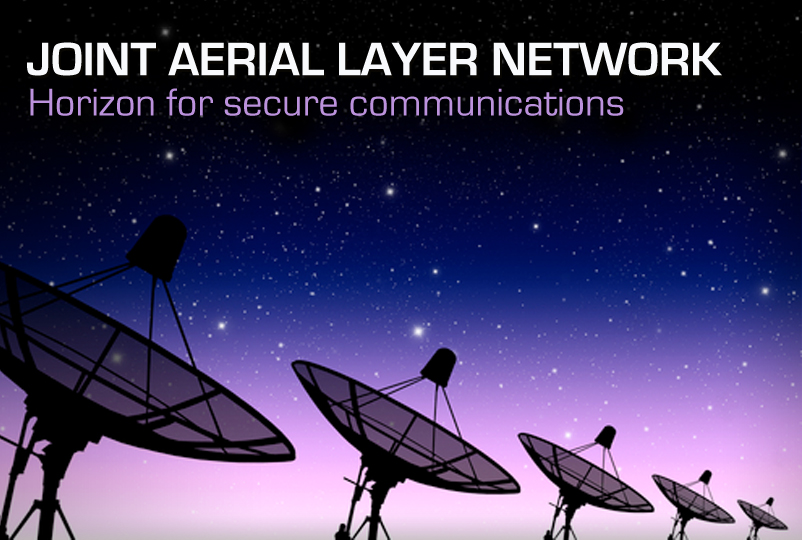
Joint Aerial Layer Network